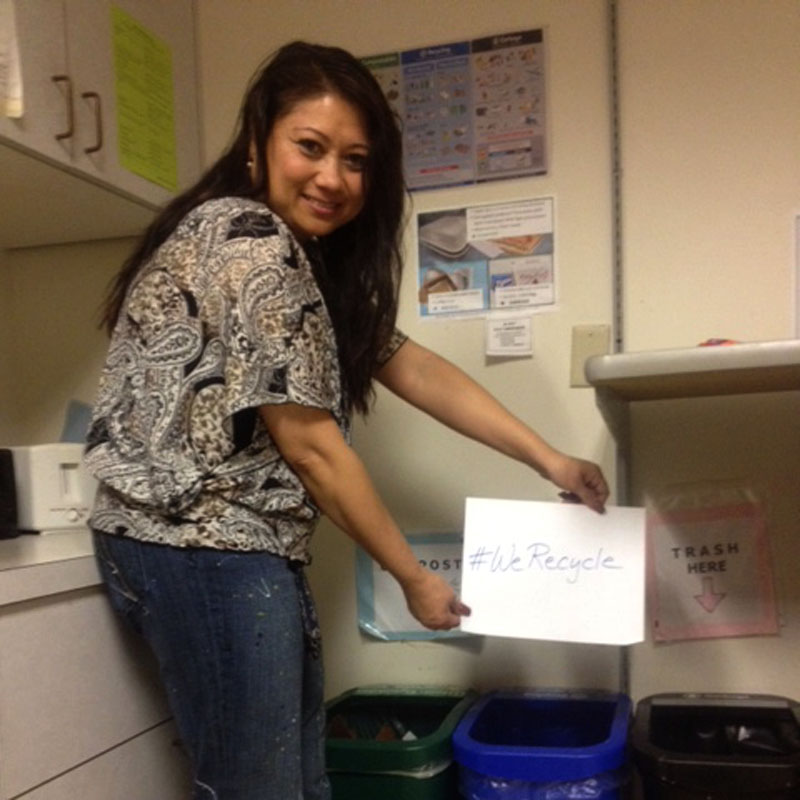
EPA Employee Debra Recycles

At EPA, #WeRecycle. Learn how you can too: www2.epa.gov/recycle